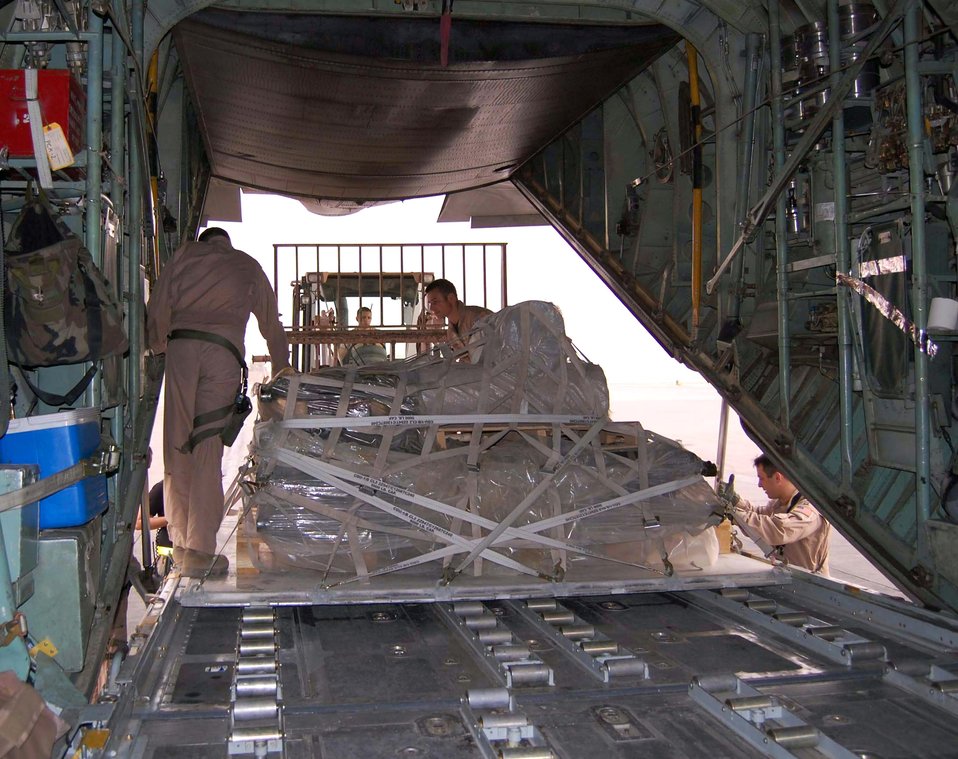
Moving the war: No pain, no gain

Loadmasters guide a pallet of equipment into the cargo area of a waiting C-130 Hercules Oct. 11 in Southwest Asia. Ensuring the load fits properly is essential for safe transport.